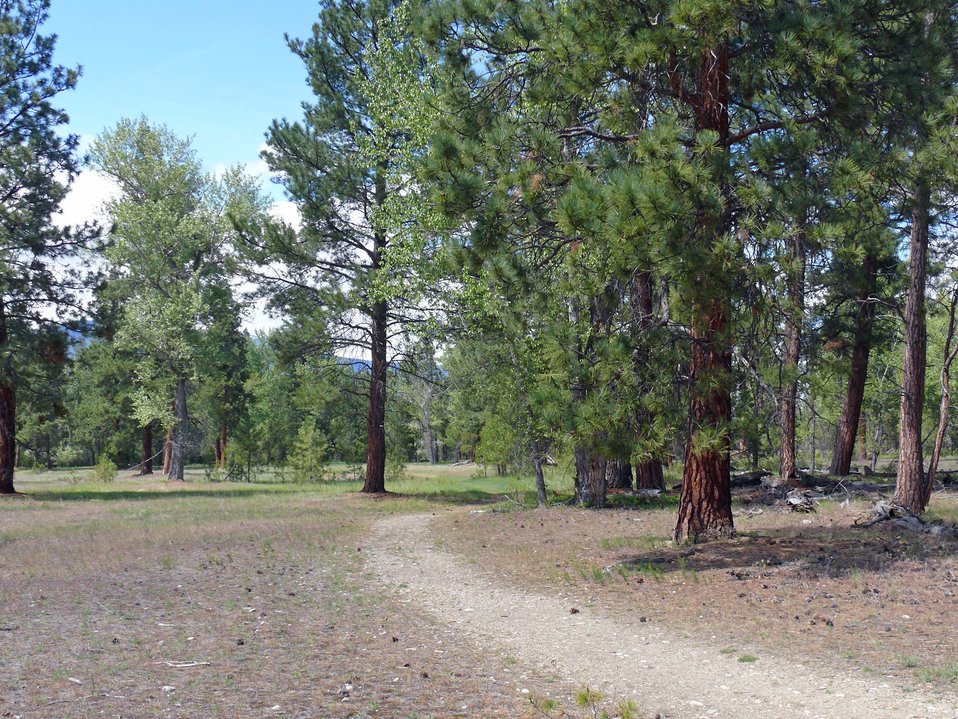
Wildlife Viewing Area Trail2, Lee Metcalf Refuge

Lee Metcalf National Wildlife Refuge, Montana.